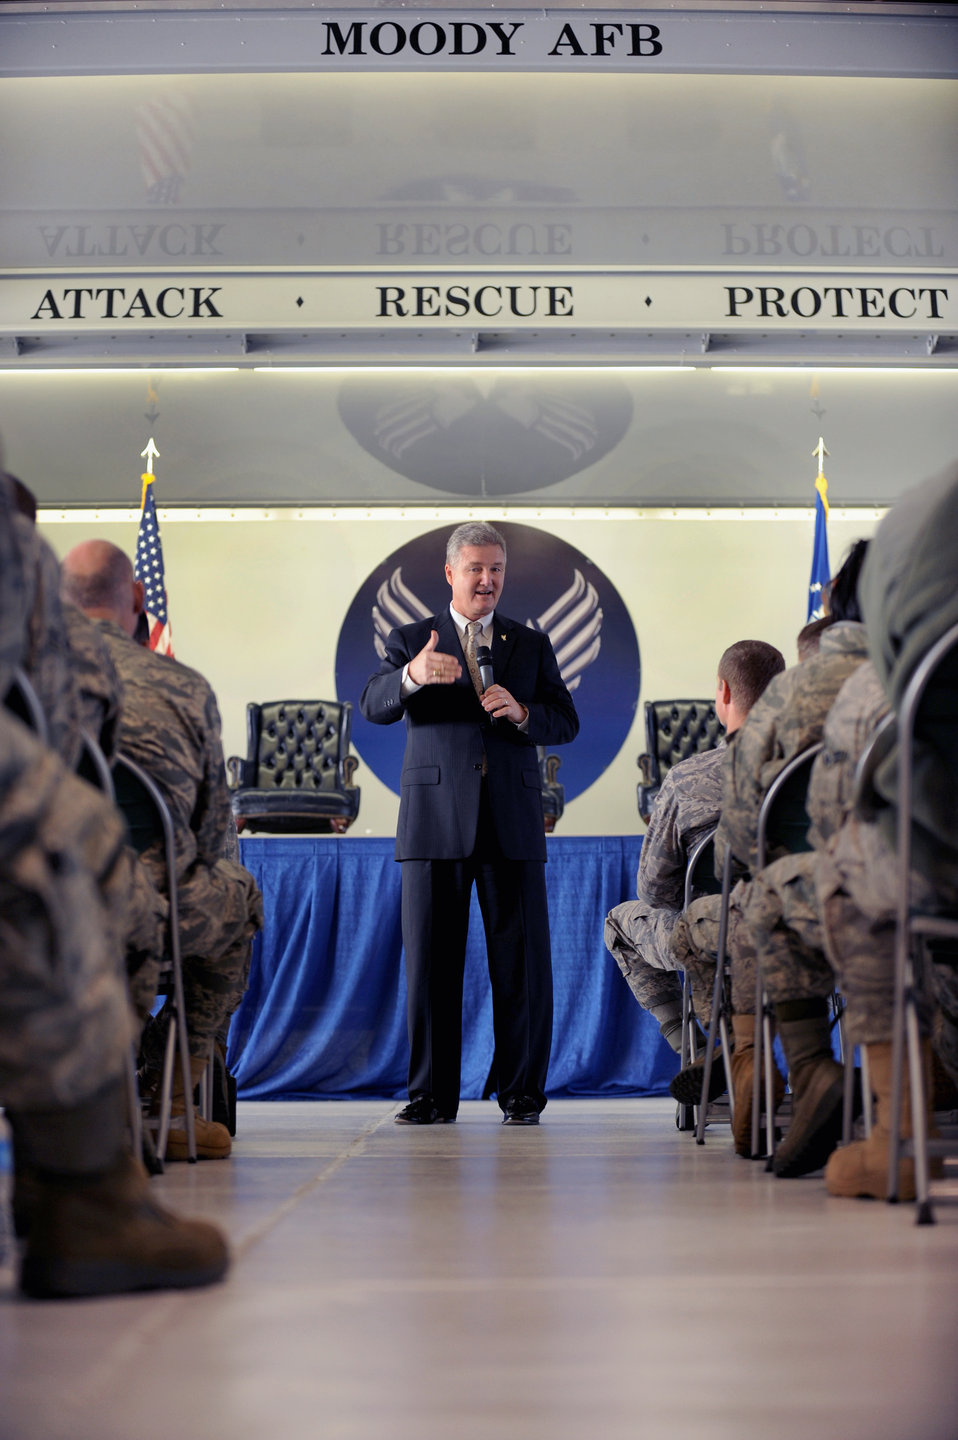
14th CMSAF mentors Moody Airmen

Retired Chief Master Sgt. of the Air Force Gerald Murray speaks during a chief's call Dec. 2, 2010, at Moody Air Force Base, Ga. Chief Murray was appointed CMSAF on July 1, 2002 and became the 14th man to hold that position.